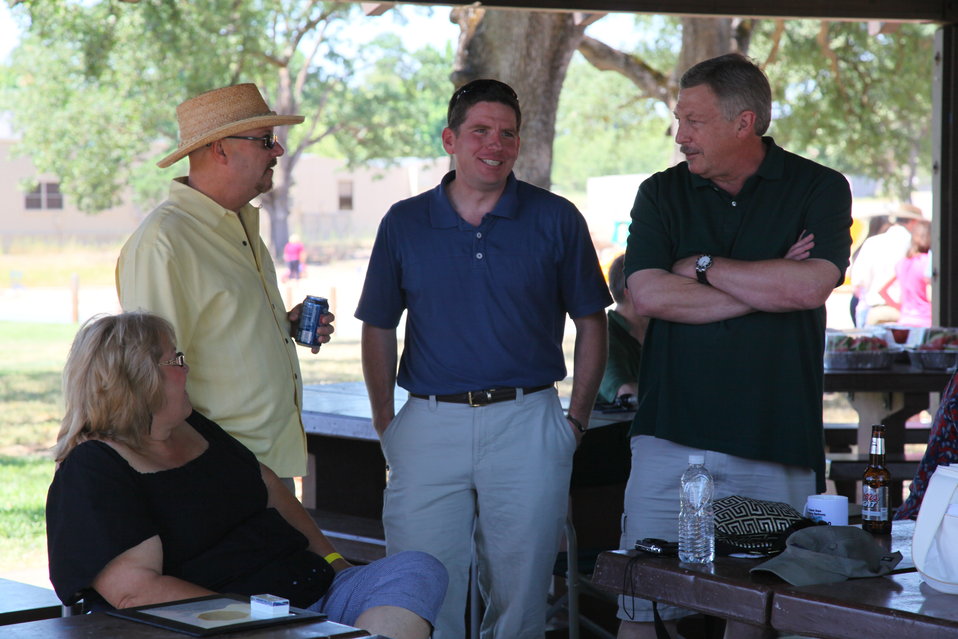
2011 Annual Picnic